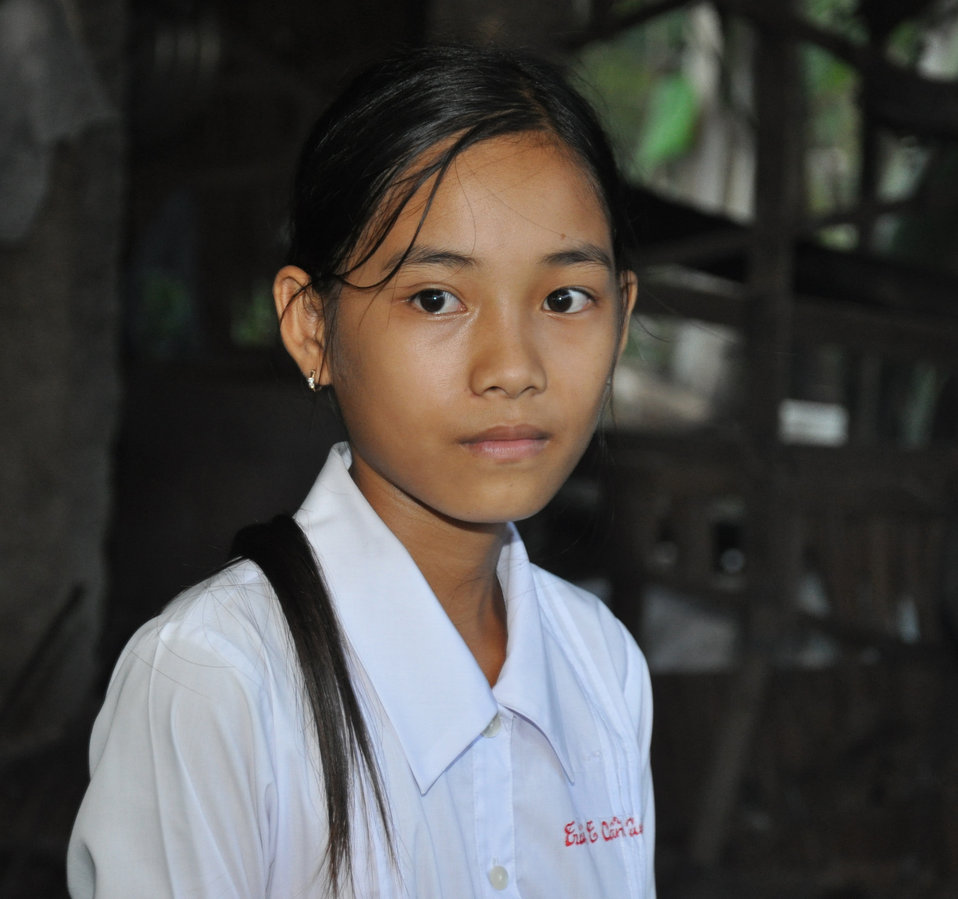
Supporting Girls Education in Vietnam